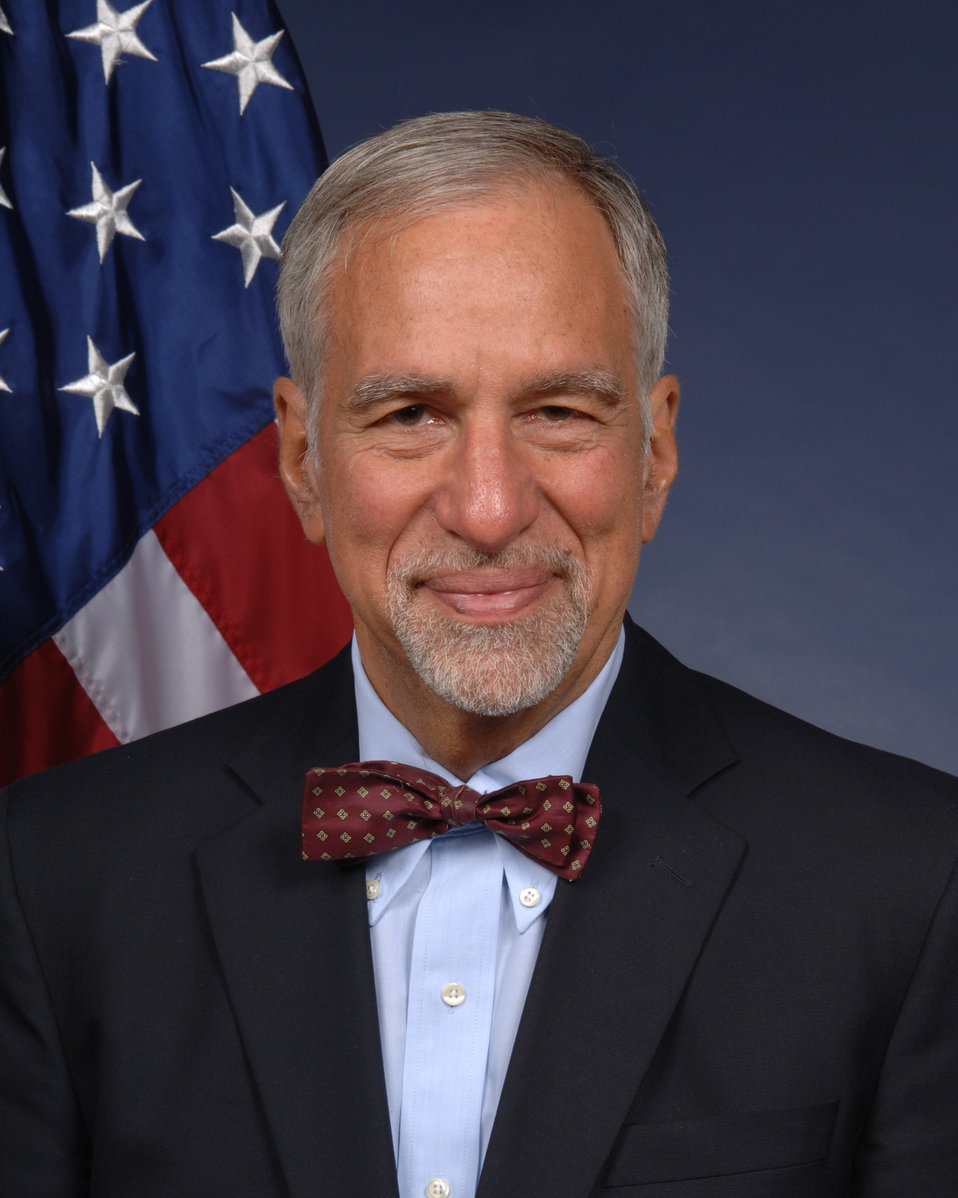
Phillip Singerman

Associate Director for Innovation & Industry Services